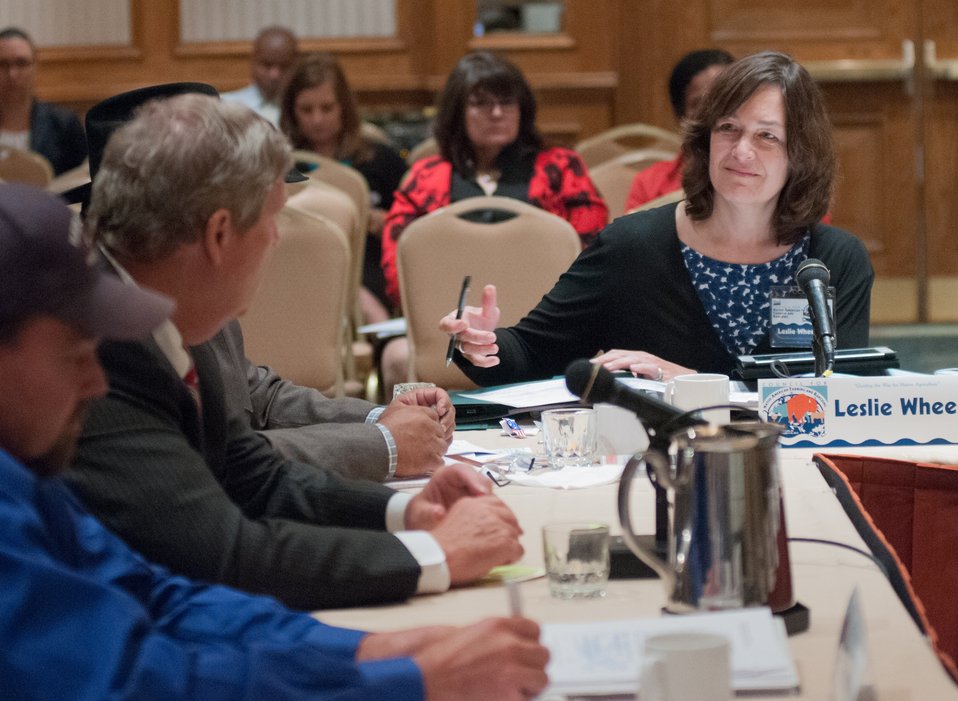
The U.S. Department of Agriculture's (USDA) Director of Tribal Relations Leslie Wheelock, right, Agriculture Secretary Tom Vilsack, second from left, USDA Council for Native American Farming and Ranching (CNAFR), on Monday, Sep. 9, 2013 at the L'Enfant Plaza Hotel, in Washington, D.C. CNAFR was created to advise the Secretary on ways to eliminate barriers to participation for Native American Farmers and Ranchers in USDA programs. The Council was established as part of the Keepseagle settlement, and is conducted under the oversight of USDA's Office of Tribal Relations, which is part of the Office of the Secretary of Agriculture. Also in attendance is Agriculture Assistant Secretary for Civil Rights Joe Leonard, Jr. Ph.D., Farm Services Administration Administrator Juan M. Garcia and Deputy Administrator for Farm Loans Programs Chris Beyerhelm.